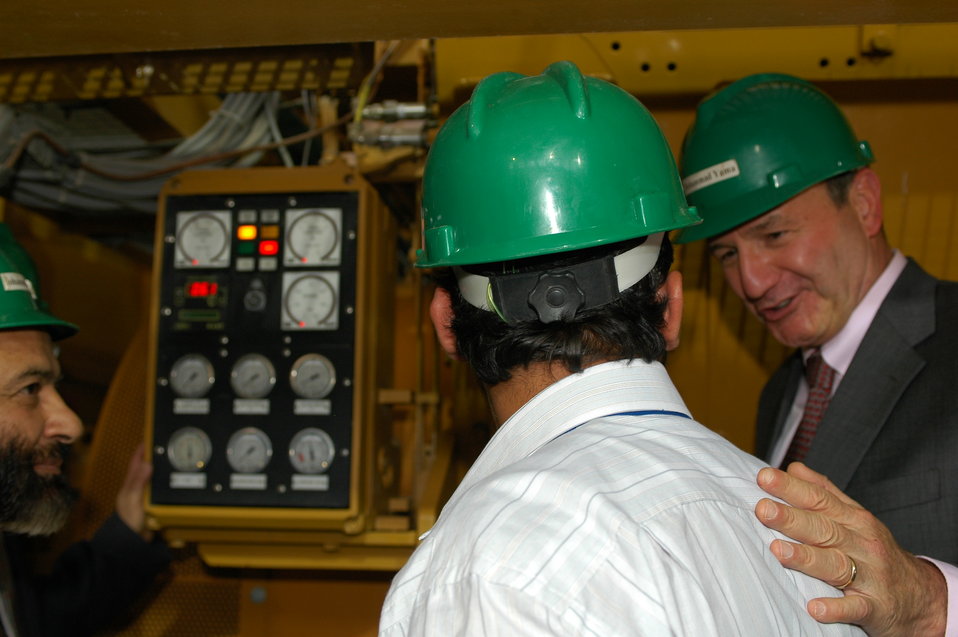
105 MW Tarakhil Power Plant Handover